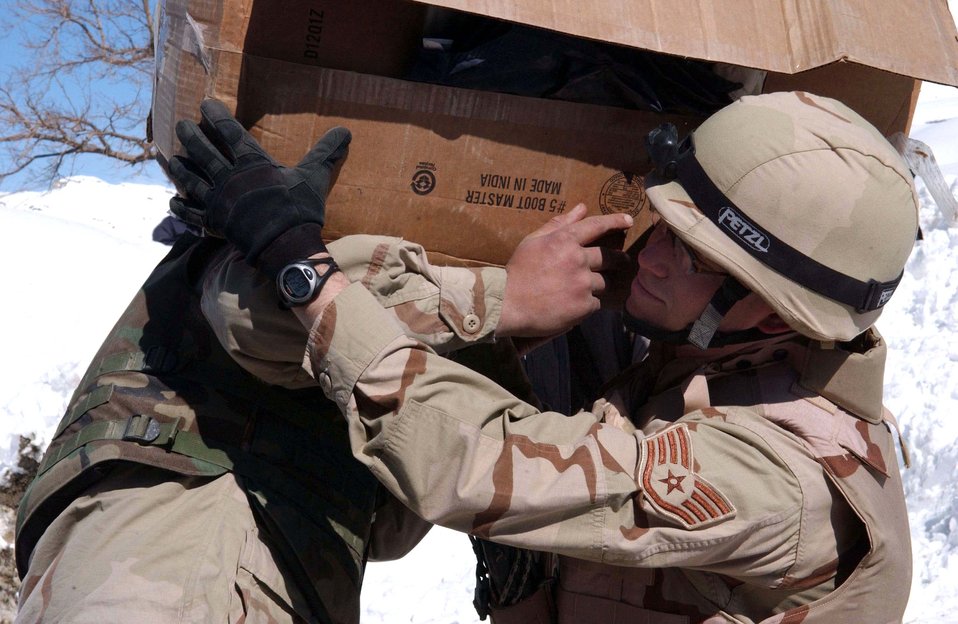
Parwan villages receive emergency relief from Bagram Soldiers, Airmen

SALANG DISTRICT, Afghanistan -- Staff Sgt. Robert Whitehurst, part of a team delivering humanitarian aid to snow-bound villages, receives a box of supplies being unloaded from a relief truck here to pass along a human supply chain. Sergeant Whitehurst is assigned to the 455th Expeditionary Civil Engineer Squadron's explosive ordnance disposal team.